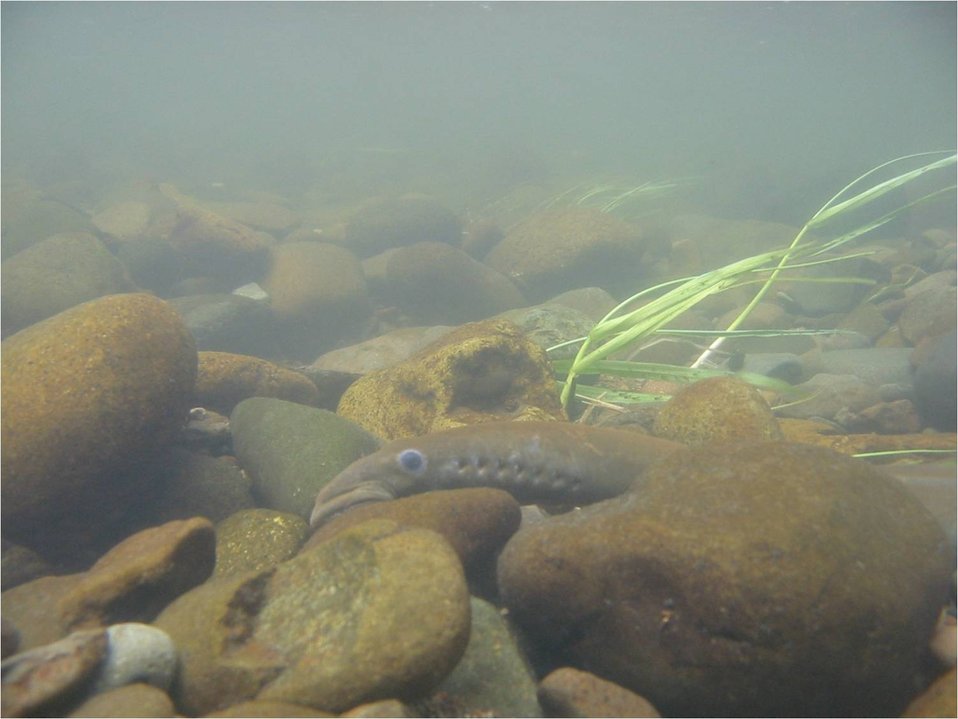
Lamprey on rocks

Pacific lampreys spawn in similar habitats to salmon: in gravel bottomed streams in riffle habitat.